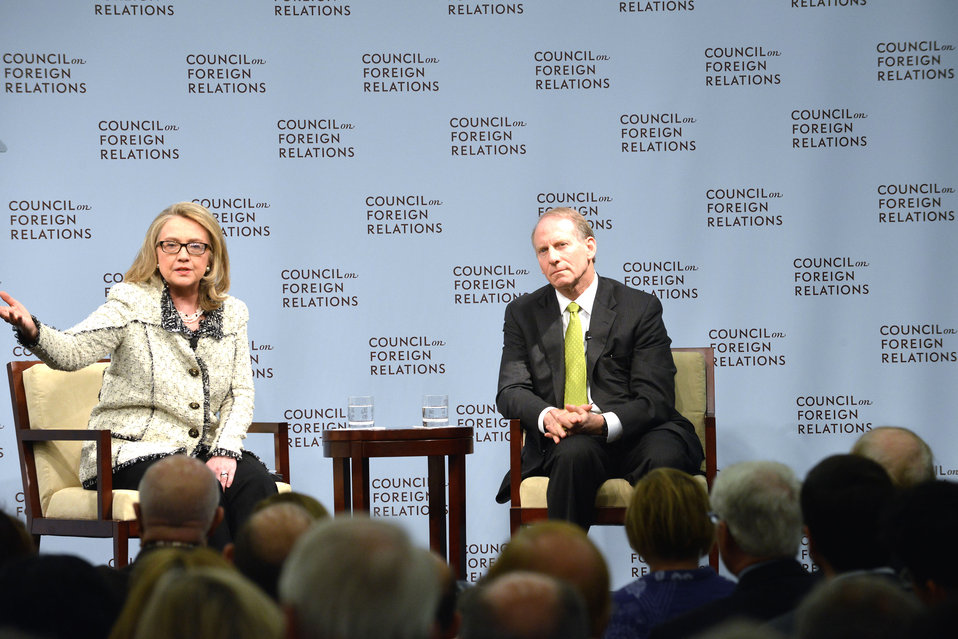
Secretary Clinton Delivers Remarks on American Leadership

U.S. Secretary of State Hillary Rodham Clinton speaks with Richard Haass, President of the Council on Foreign Relations, after delivering a speech on American leadership at the Council on Foreign Relations in Washington, D.C., on January 31, 2013.